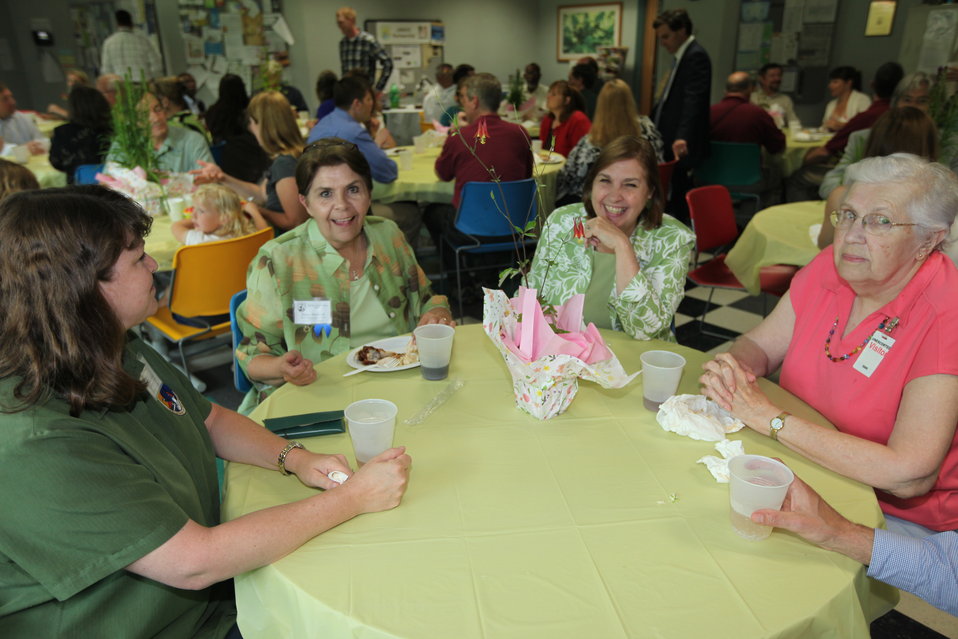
Northeast Region Employee Appreciation Awards

Luncheon